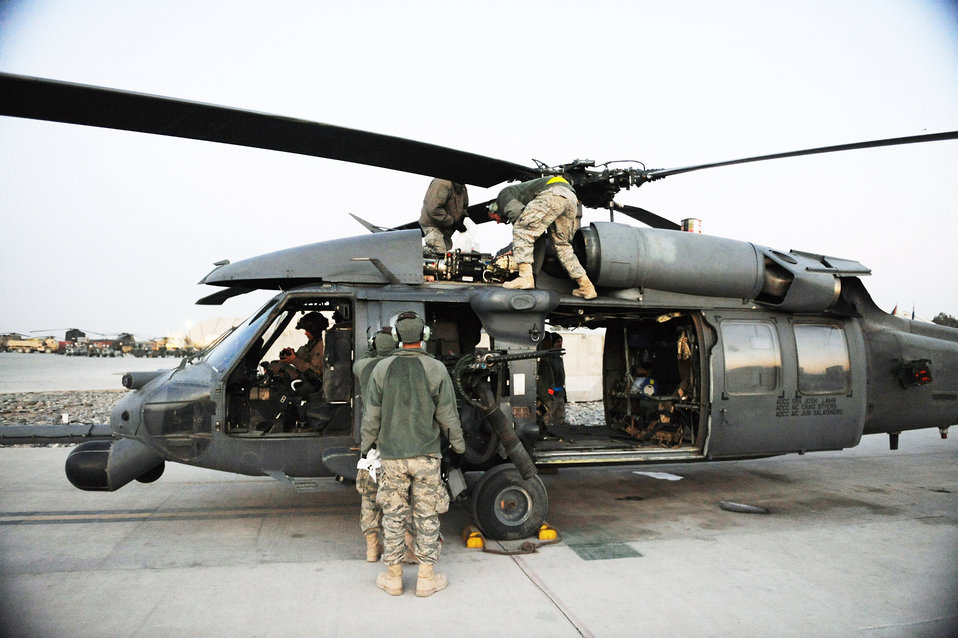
Total-Force Airmen to the rescue in Afghanistan

Airmen perform minor maintenance on an alert HH-60G Pave Hawk after a medical evacuation mission Jan. 10, 2010, at Kandahar Airfield, Afghanistan. The Airmen are assigned to the 66th Expeditionary Rescue squadron.